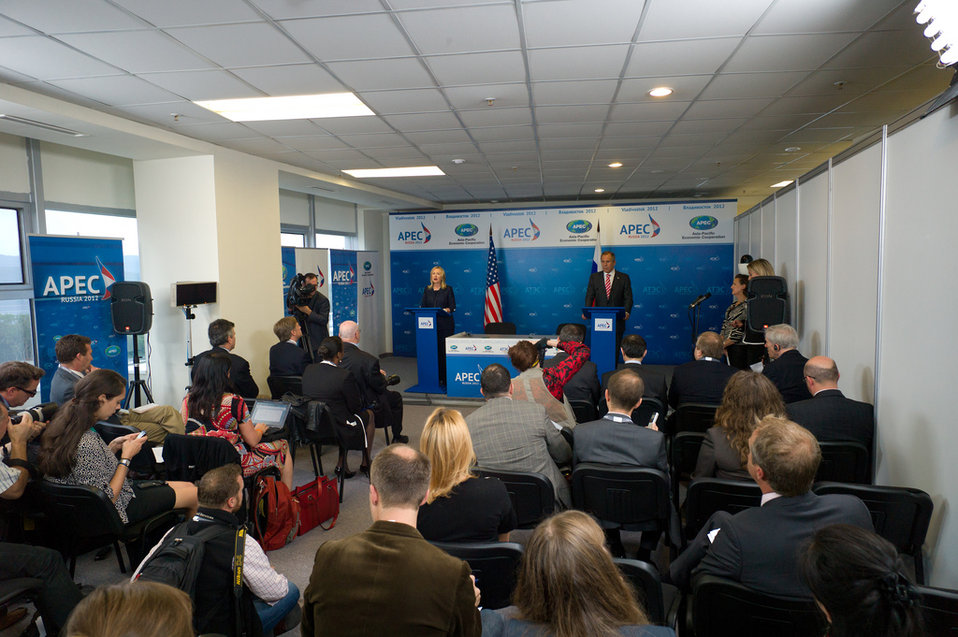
Secretary Clinton and Russian Foreign Minister Lavrov Address Reporters

U.S. Secretary of State Hillary Rodham Clinton and Russian Foreign Minister Lavrov hold a joint press conference after signing a Memorandum of Understanding between the Government of the United States of America and the Government of the Russian Federation on Cooperation in the Antarctic during the Asia-Pacific Economic Cooperation Leaders' Week in Vladivostok, Russia, September 8, 2012.